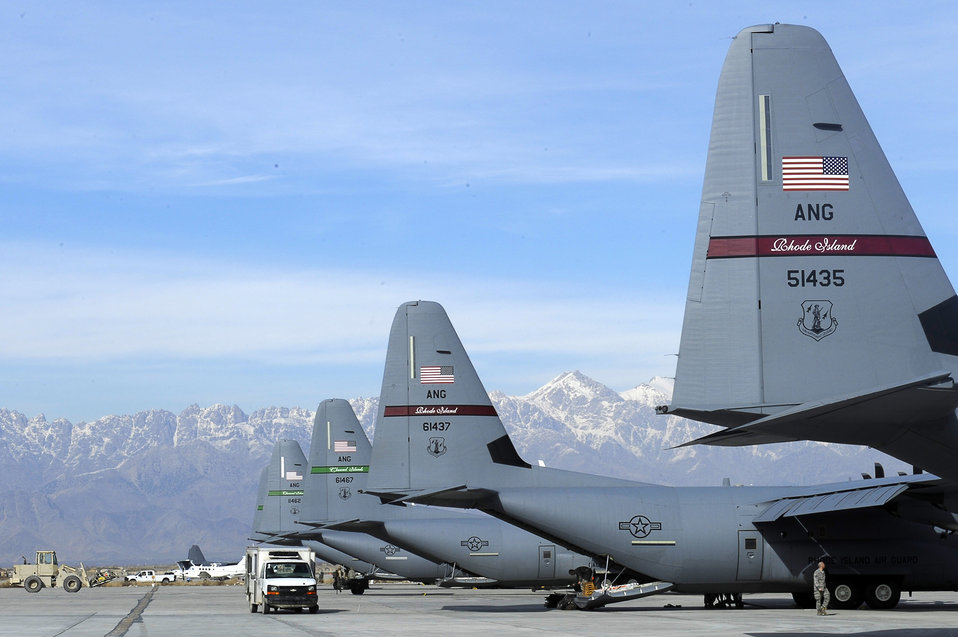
C-130J delivers supplies over Afghanistan

Prepped for the next mission, a line of C-130J Super Hercules wait on the flightline at Bagram Airfield, Afghanistan, March 2, 2010.